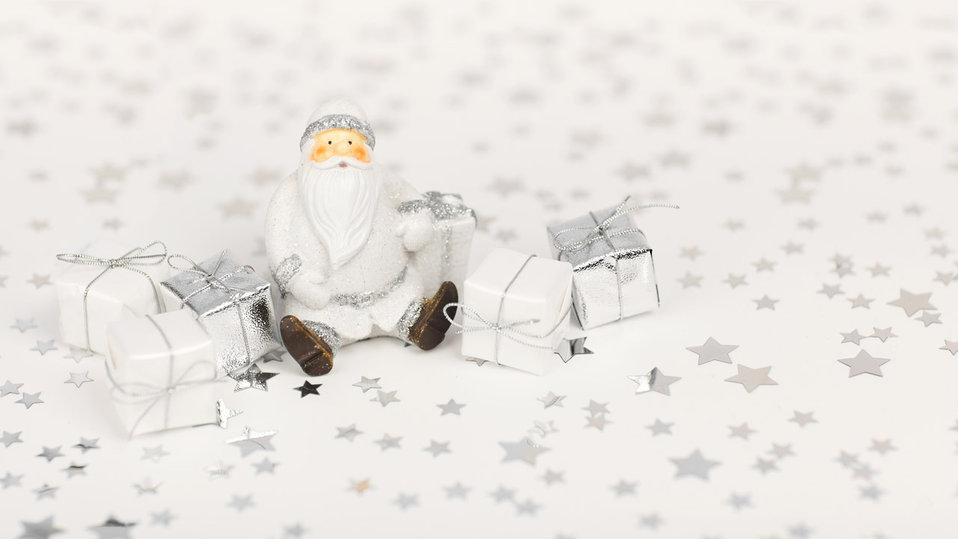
Santa claus with presents

Santa claus in white with presents sitting among stars.